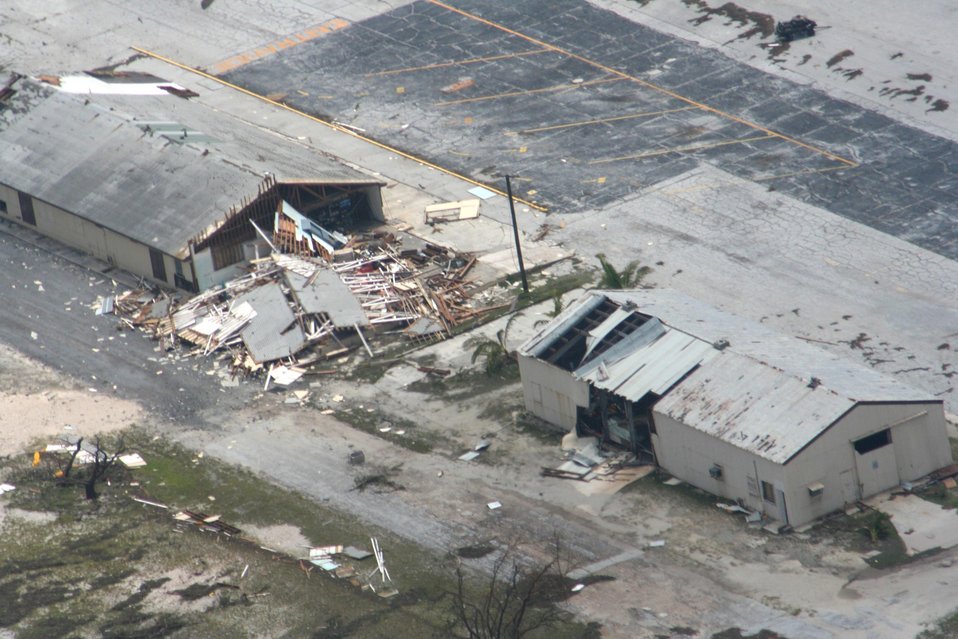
Damage on Wake less than feared, flyover shows

A Sept. 2 flyover of Wake Island by a U.S. Coast Guard aircrew following the passage of Super Typhoon Ioke shows damage to two buildings. Ships carrying response forces are due to arrive at the island soon.